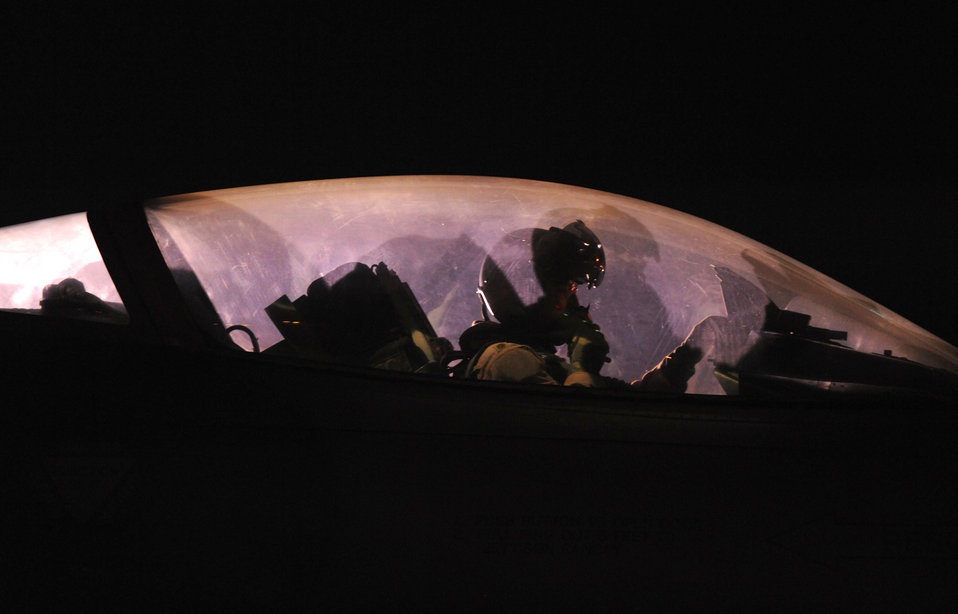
Falcons in Southwest Asia

An F-16 Fighting Falcon pilot from the 480th Fighter Squadron prepares for takeoff May 2, 2011, from Spangdahlem Air Base, Germany, for the unit’s Air Expeditionary Force deployment.